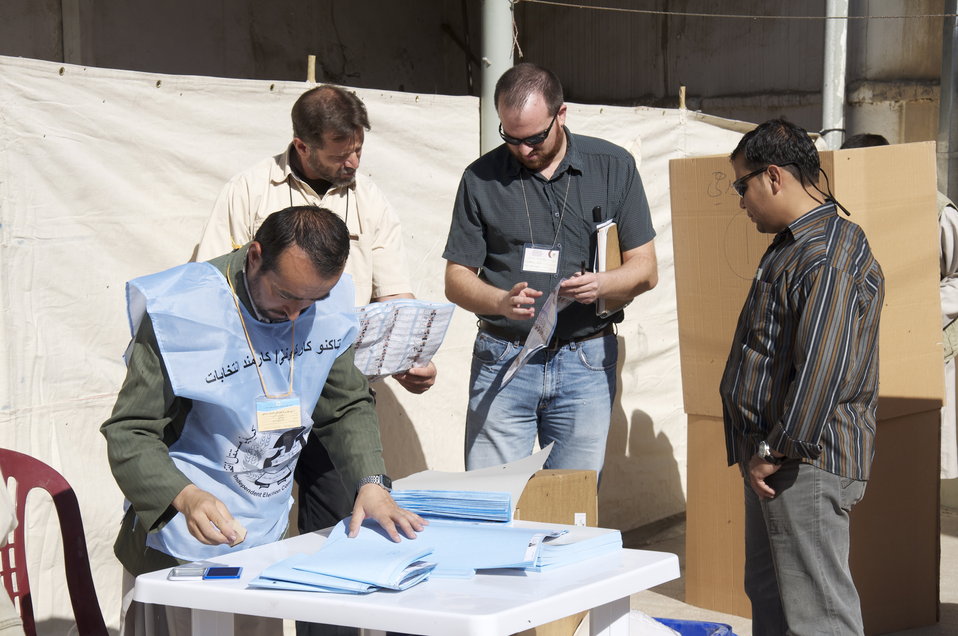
Election Observers